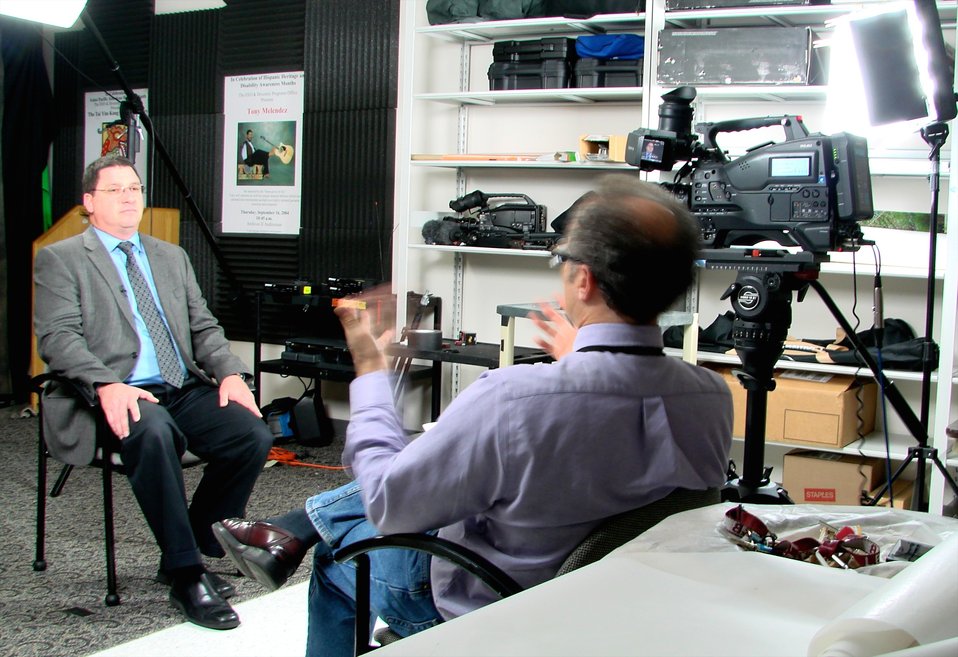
Video interview with David Mengel for documentary on the 20th anniversary of College Park Archives; Location: Archives 2 - Video Studio, College Park, MD